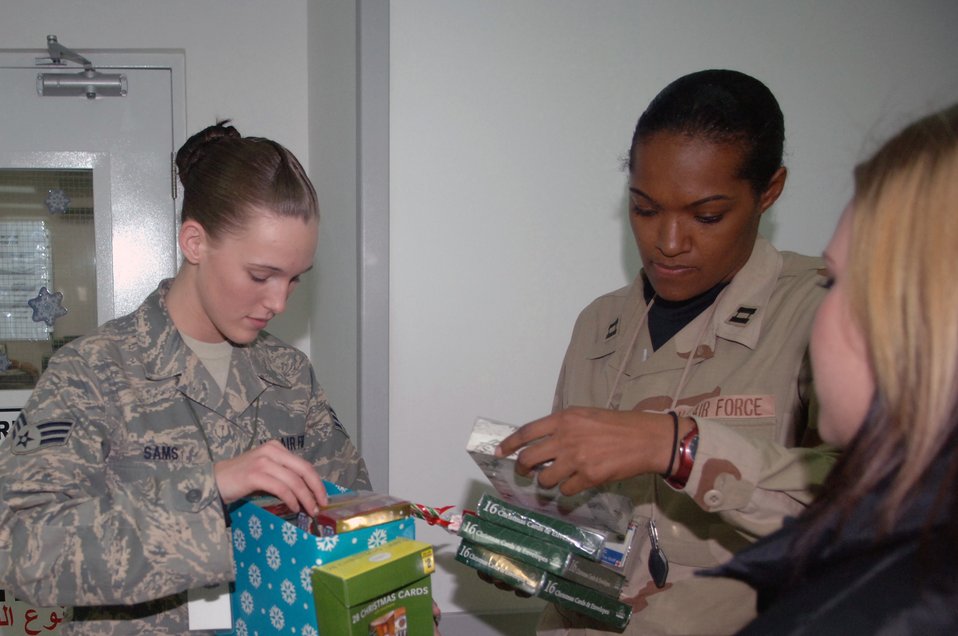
Cards for Troops help spread holiday cheer

Senior Airman Amber Sams (second from left) helps Capt. Saunya Bright (second from right) find the perfect holiday card Nov. 30 at Balad Air Base, Iraq. As part of the self-initiated Cards for Troops program, Airman Sams handed out more than 30 boxes of holiday cards to Air Force Theater Hospital staff and patients here. Airman Sams is a 332nd Expeditionary Services Squadron recreation coordinator deployed from Langley Air Force Base, Va., and Captain Bright is assigned to the 332nd Expeditionary Medical Support Squadron and deployed from Lackland AFB, Texas.